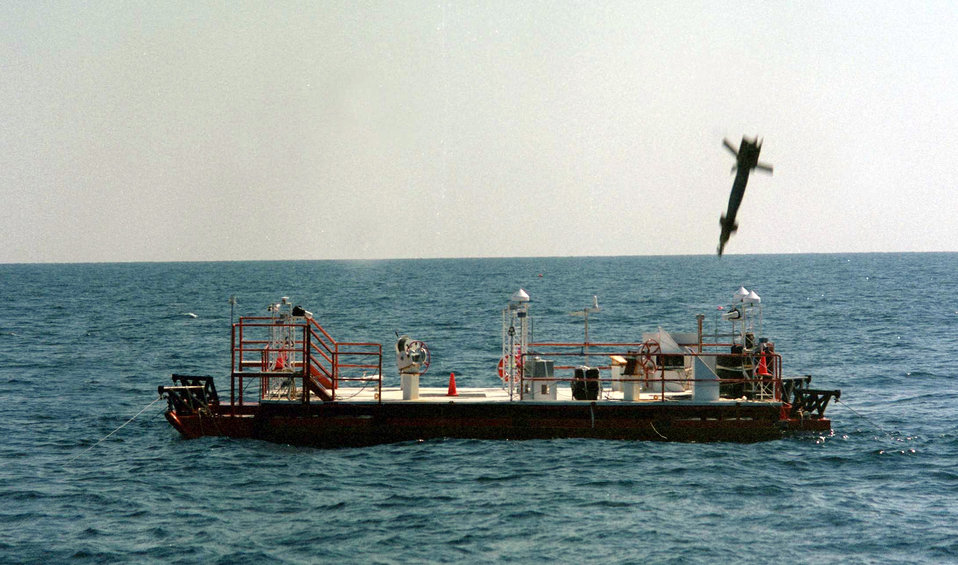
I sunk your Battleship

EGLIN GULF TEST RANGE, Fla. -- A GBU-12 laser-guided bomb is about to strike a barge during an offshore scoring demonstration test here. The range is the only Department of Defense test facility capable of testing weapons like this.